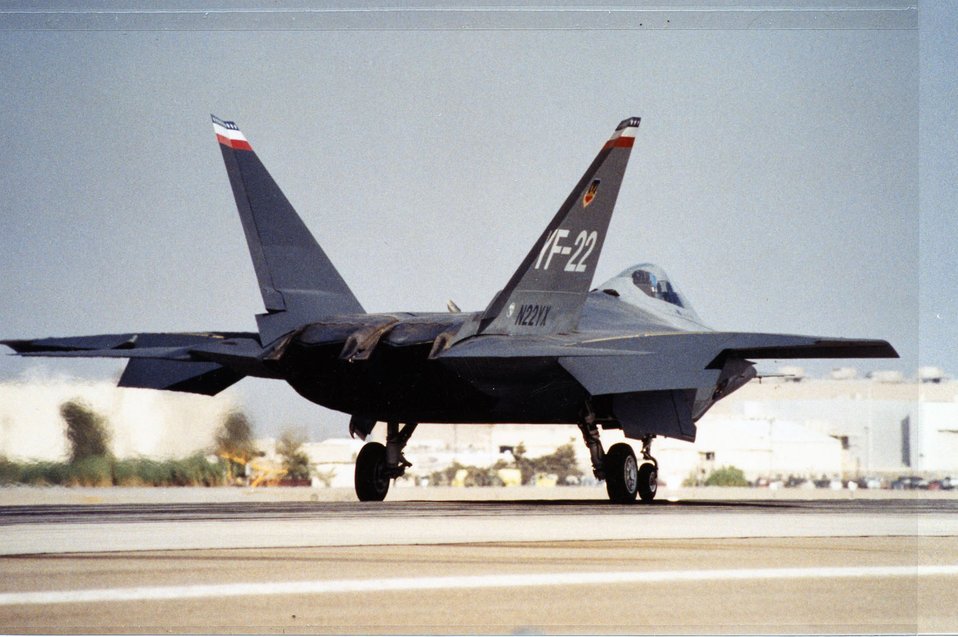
YF-22 Advanced Technology Fighter ready for takeoff

The YF-22 Advanced Technology Fighter ready for takeoff at Air Force Plant 42, Palmdale, Calif.